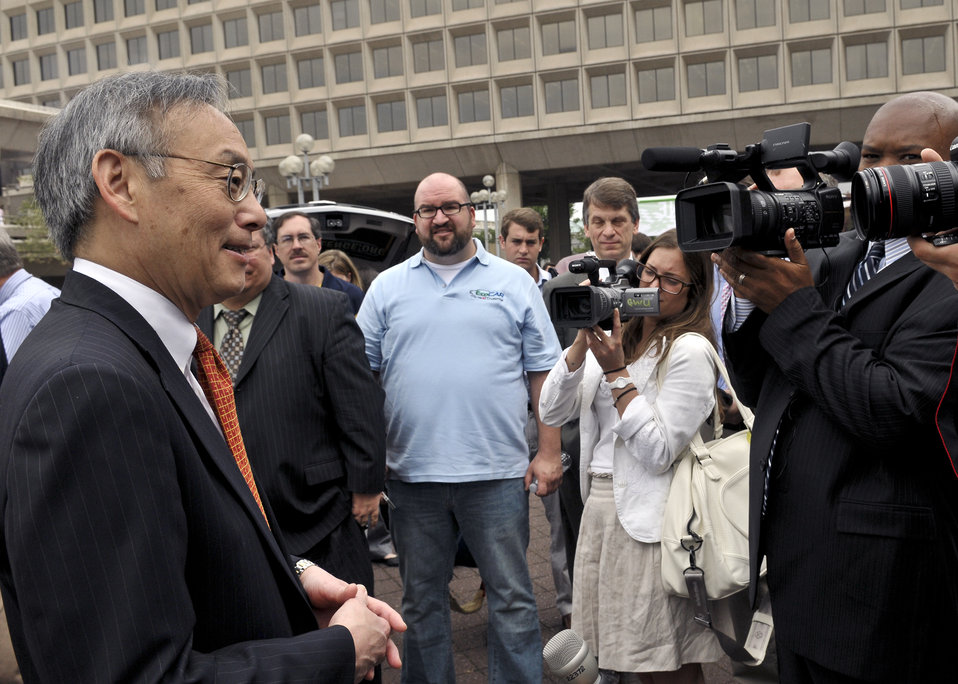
EcoCAR Challenge Finish Line 2 of 8

Secretary Steven Chu discusses the EcoCAR Challenge during the 'Finish Line' event held at the US Department of Energy headquarters in Washington, DC.